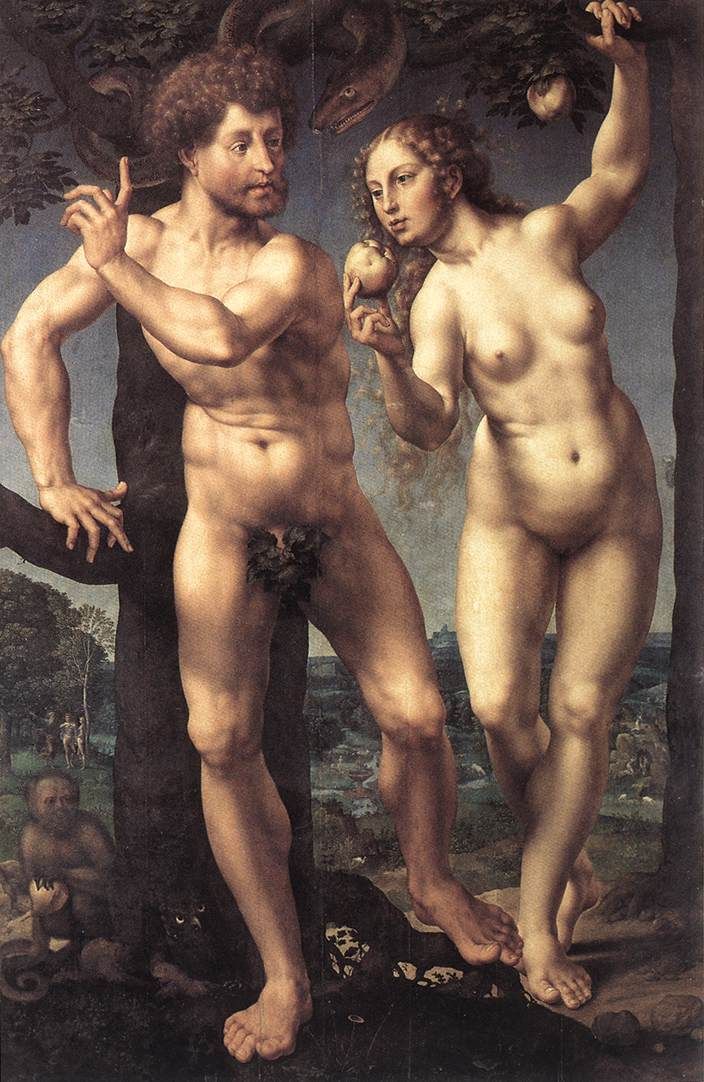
(1525) Jan Gossaert-Adam & Eve (Staatliche Museum, Berlin)